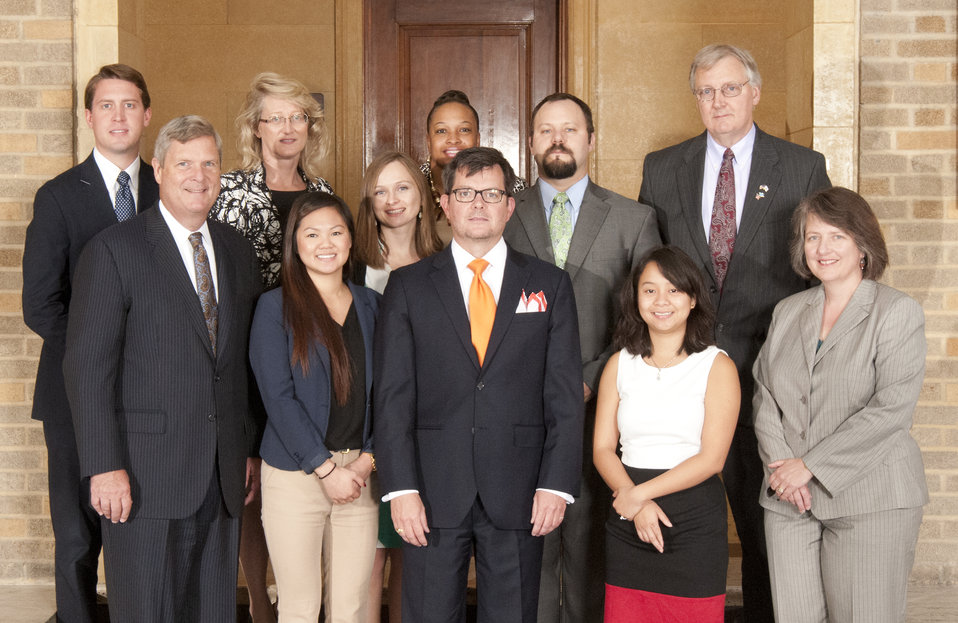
Agriculture Secretary Tom Vilsack and Deputy Agriculture Secretary Kathleen Merrigan with Honor Award Group Afghanistan Support Group, Foreign Agricultural Service (FAS) on the patio of the U.S. Department of Agriculture in Washington, D.C. on Wednesday, Sept. 12, 2012. The Afghanistan Support Team provided exemplary support service for deployed USDA employees in Afghanistan.